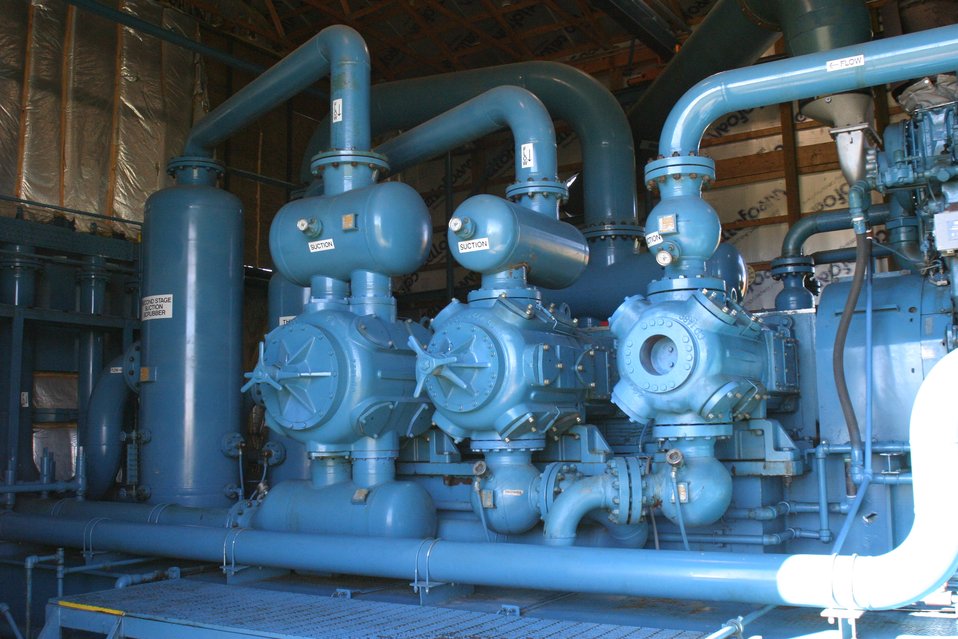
Enhanced Oil Recovery Facility located in Gaylord, Michigan. This facility includes separation and compression units for use in recovery and storage of CO2.